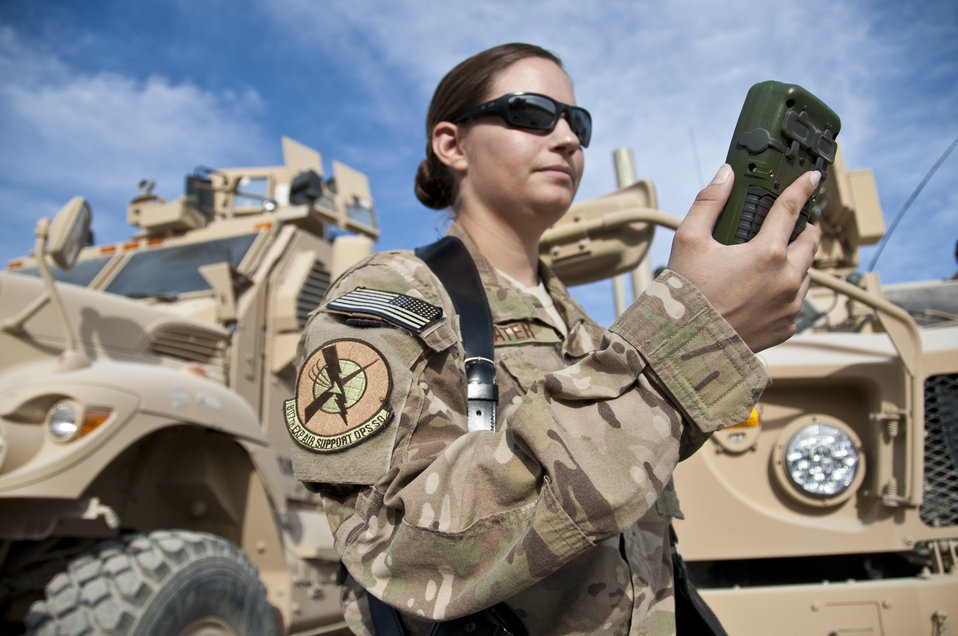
Space liaison officer trains US, coalition forces

KANDAHAR AIRFIELD, Afghanistan -- Air Force Capt. Bryony Veater, Space Liaison Officer and Space Weapons Officer embedded with the 807th Expeditionary Air Support Operations Squadron, looks at a Defense Advanced GPS Receiver Nov. 23, 2011. Over the past six months, Veater has been training U.S. and coalition forces how to best utilize space into ground warfare.